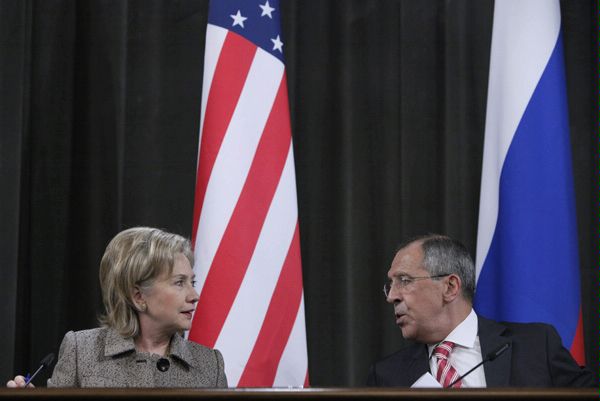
Secretary Clinton With Russian Foreign Minister Sergey Lavrov

U.S. Secretary of State Hillary Rodham Clinton speaks with Russian Foreign Minister Sergey Lavrov during their news conference in Moscow, Russia March 18, 2010.